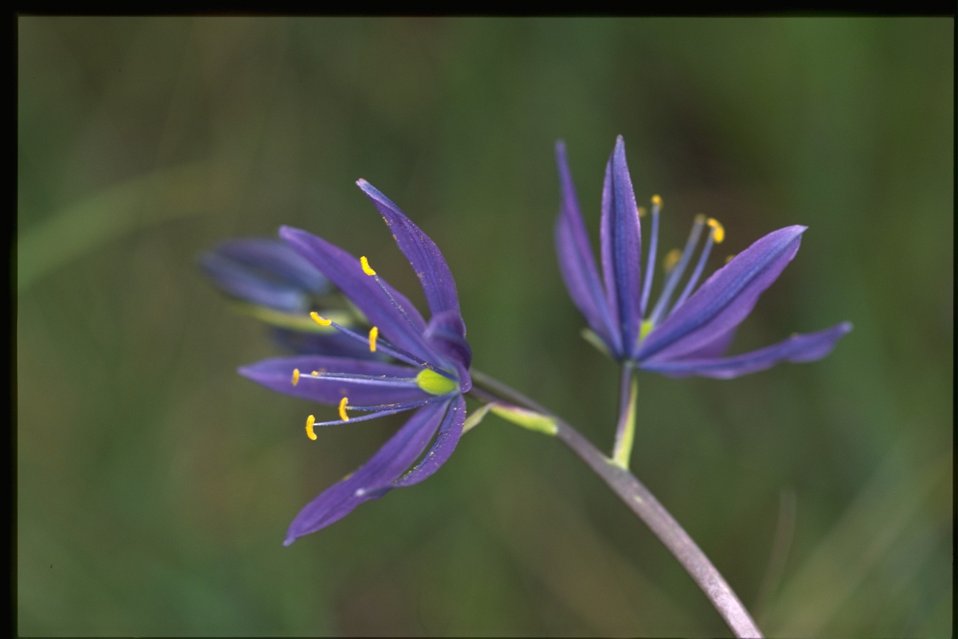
Closeup shot of Camasia quamash.